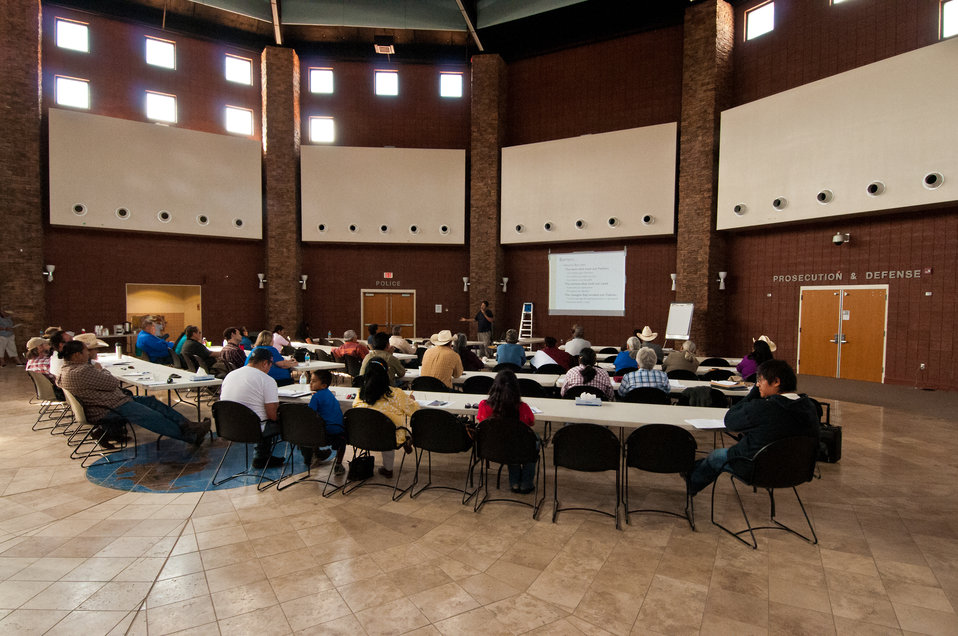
U.S. Department of Agriculture (USDA) Natural Resources Conservation Service (NRCS) District Conservationist Lorne Denetclaw speaks to community and tribal members during a Conservation Planning Meeting showcasing conservation programs offered by USDA was held at the Jicarilla Apache Nation in Dulce, NM on Wednesday, Jun. 12, 2013.